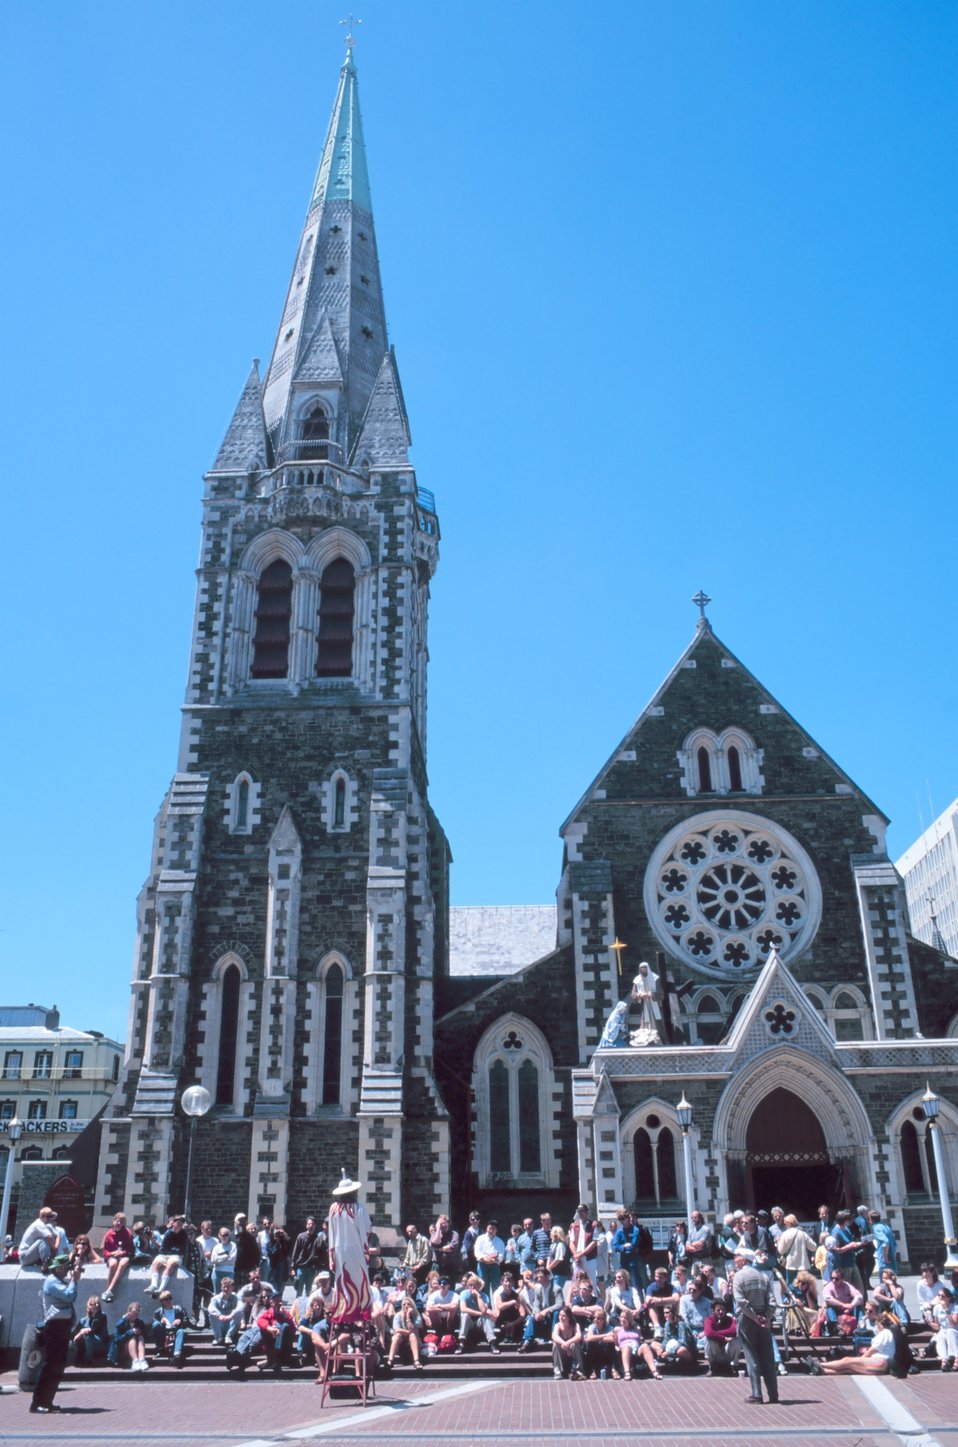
The Wizard speaking in Cathedral Square in Christchurch New Zealand.